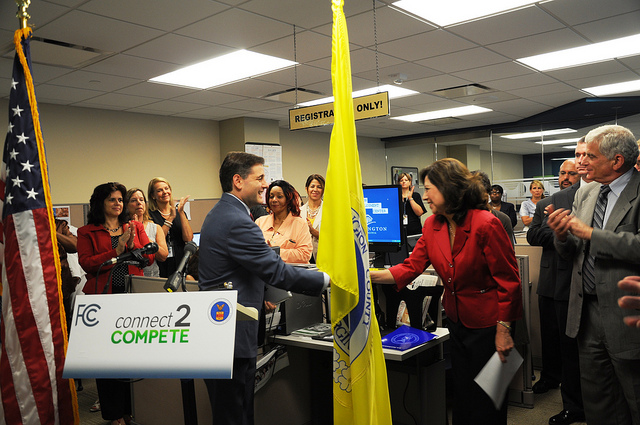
Connect to Compete 7.16.12

Chairman Genachowski and Secretary of Labor Solis greeting one another at the Connect to Compete event addressing the digital literacy and job skills gap.